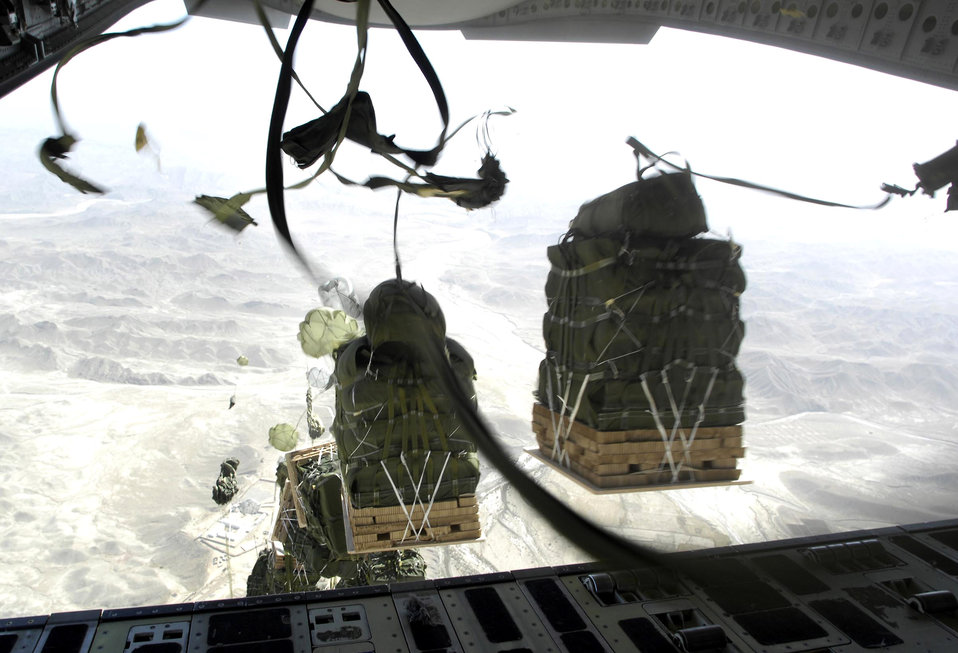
C-17 crews make record airdrop

On the first pass, 16 bundles are dropped from the lead C-17 Globemaster III to a drop zone Oct. 11 in Afghanistan. A total of 62 cargo bundles were dropped from two C-17s. This was the first time a combat cargo drop of this magnitude has taken place from two C-17s in formation over one drop zone. The planes and crews are part of the 817th Expeditionary Airlift Squadron, Manas, Kyrgyzstan.